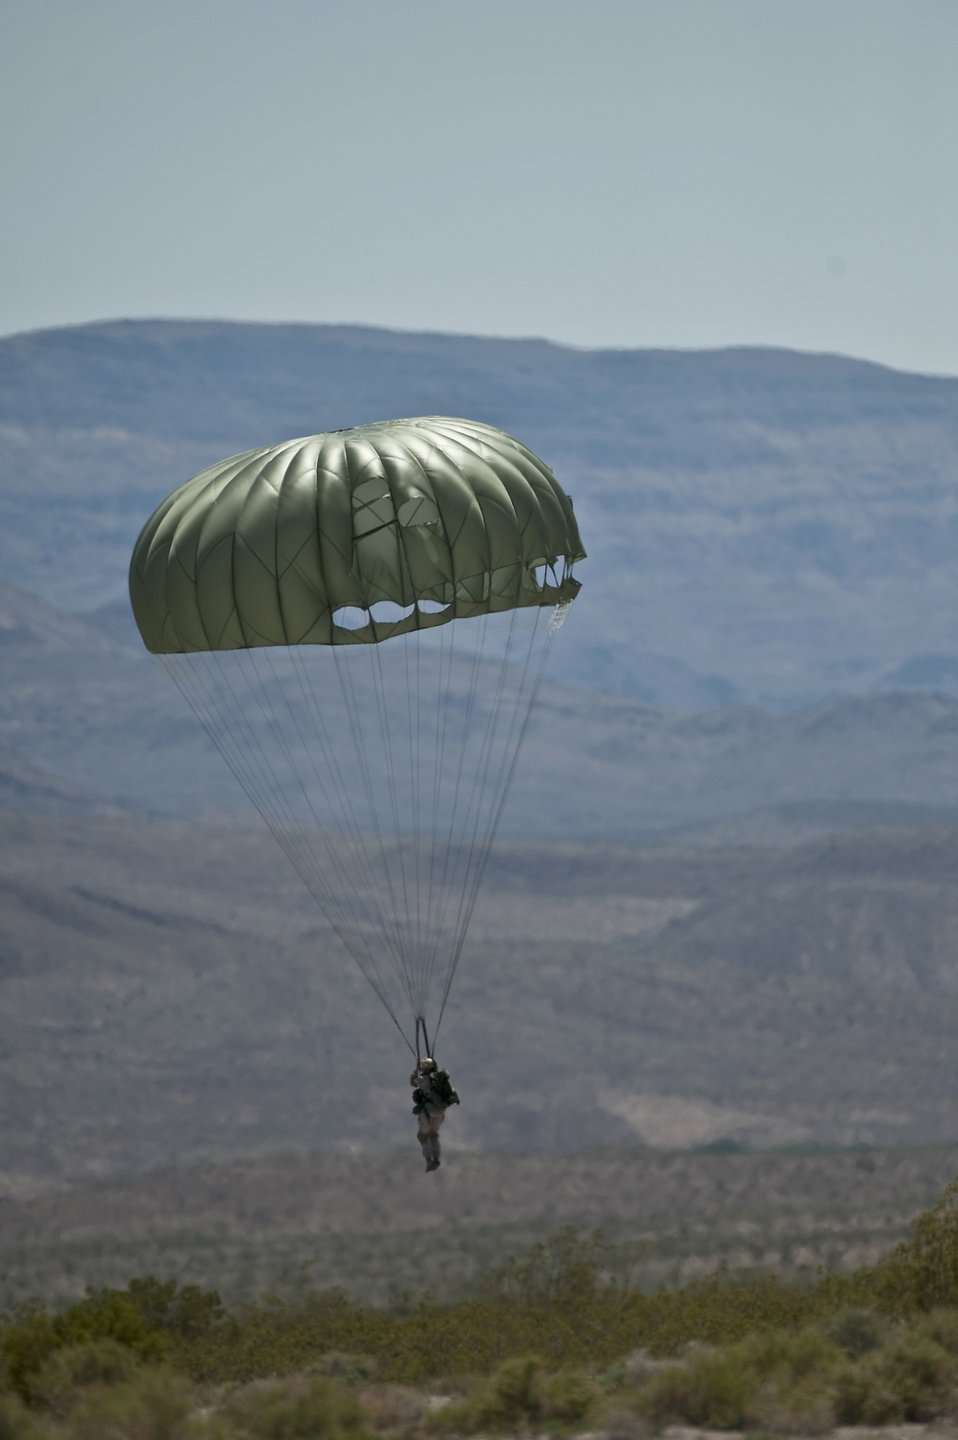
RED HORSE airborne flight

An Airman prepares to land after jumping from a C-17 Globemaster III May 12, 2011, during a training exercise above Alamo, Nev.